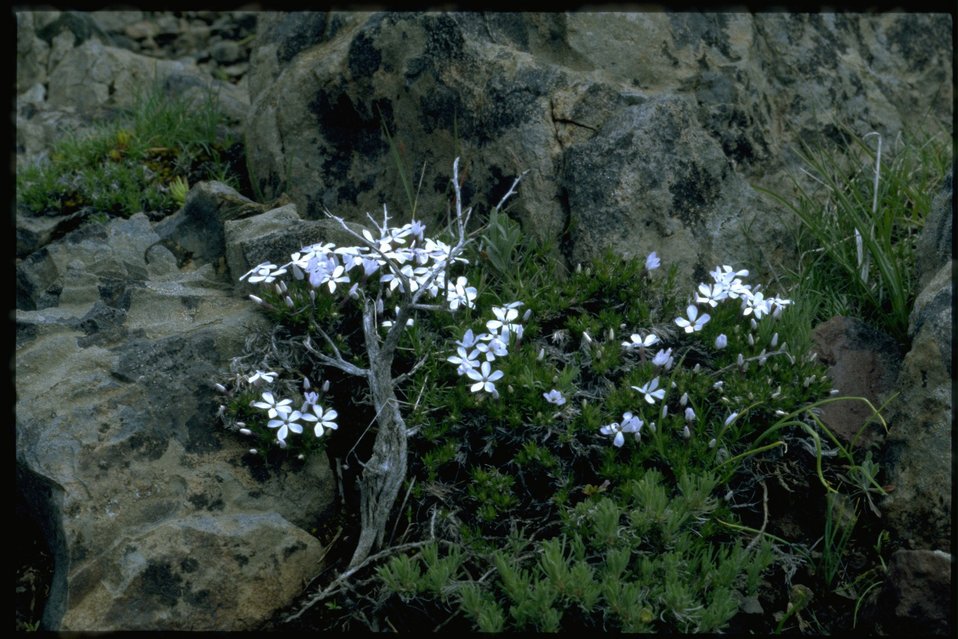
Farshot of Hood's Phlox, Phlox Hoodii, wildflowers.